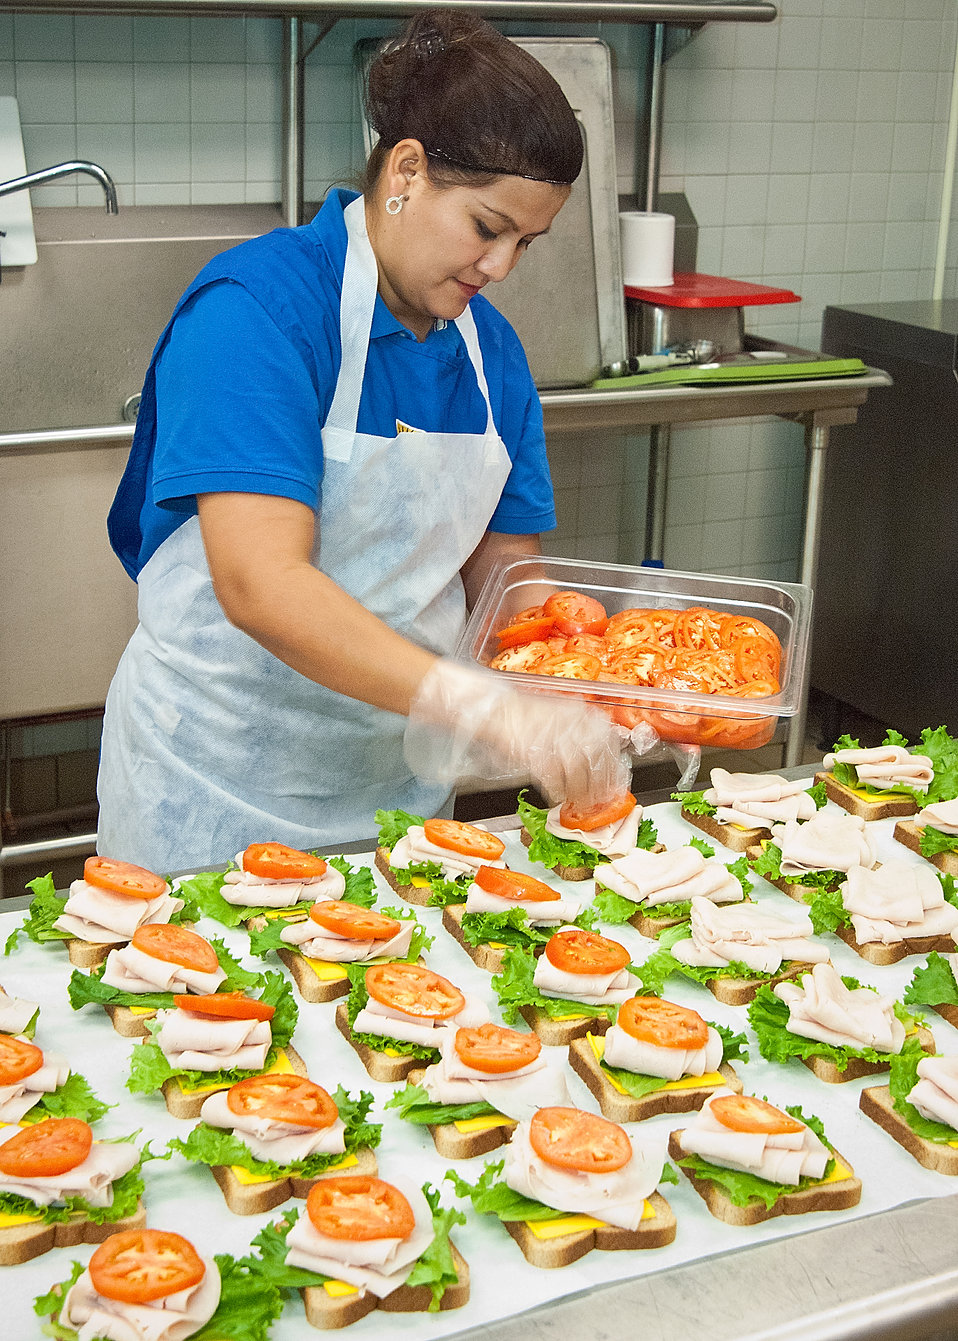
Candy Flores, Arlington Food Services prepares turkey and cheese sandwiches in the kitchen at Washington-Lee High School in Arlington, Virginia, on Wednesday, October 25, 2011. The National School Lunch Program is a federally assisted meal program administered by the United States Department of Agriculture, Food and Nutrition Service operating in public, nonprofit private schools and residential child care institutions. It provides nutritionally balanced, low-cost or free lunches to children each school day.